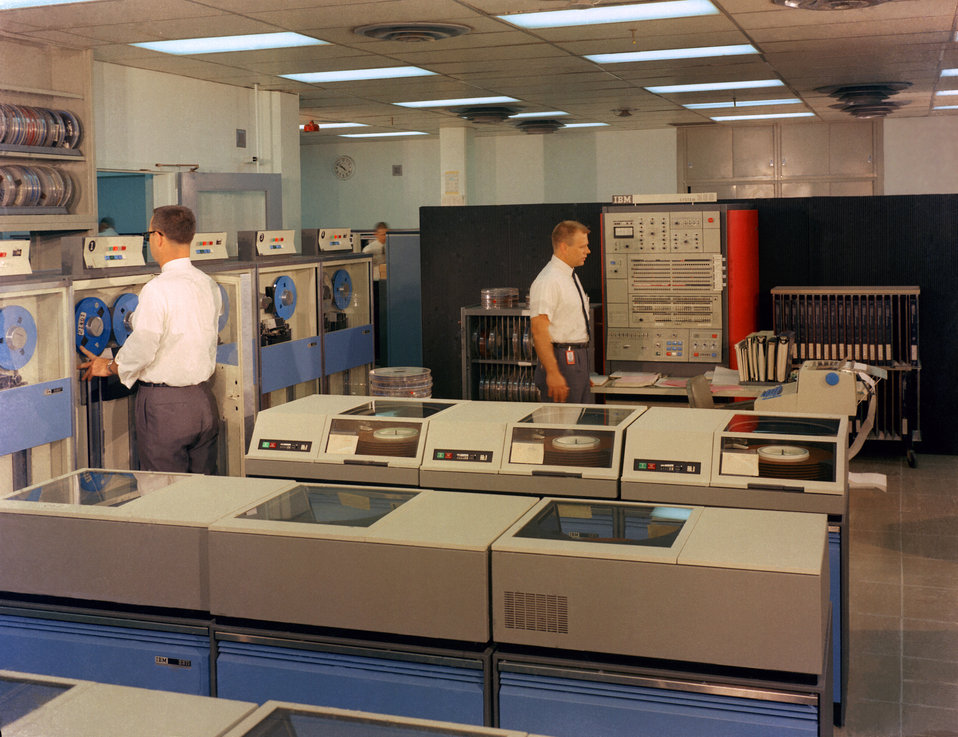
Control Data Processing IBM equipment Oak Ridge

67-110 DOE photo Frank Hoffman

Control Data Processing IBM equipment Oak Ridge Tennessee March 1967